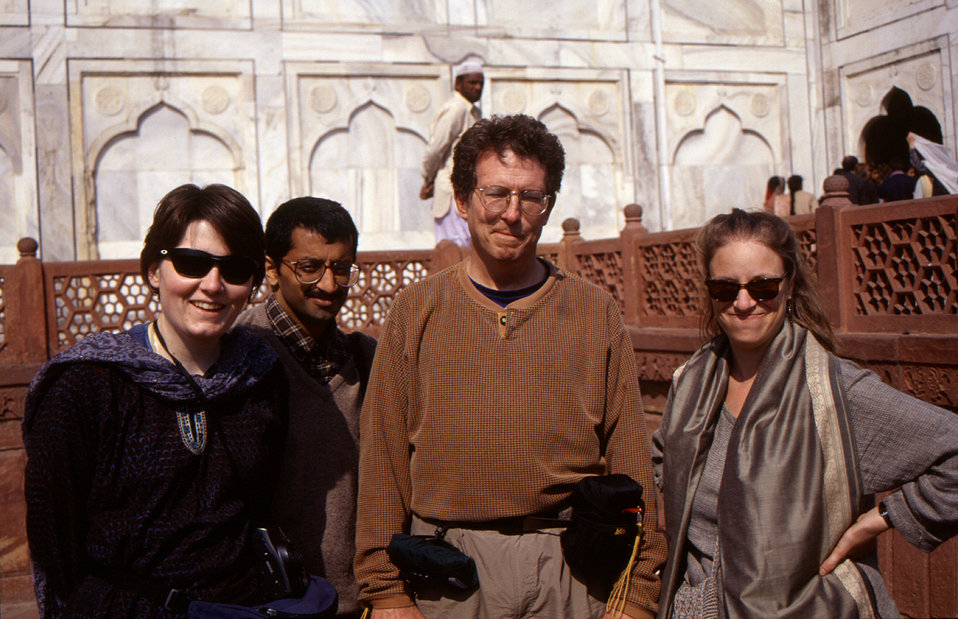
This 2000 photograph depicted four STOP Transmission of Polio (STOP) immunization initiative team members while they were on assignment in India. They were photographed by Chris Zahniser, B.S.N., R.N., M.P.H., also a team member and photographer, assigned to the state of Uttar Pradesh in northern India. Chris spent three months working in the Districts of Gorakhpur and Deoria.'The first STOP Team mostly consisted of CDC staff members who were United States citizens, i.e., 22 of 25 team members. Over time, there has been a steadily increasing involvement by citizens from the world community. It is now a truly global effort with STOP Team members reflecting the international commitment to polio eradication. International bridges are being built and global connections made among public health professionals through the STOP Team initiative that will continue long after the polio virus is gone.'